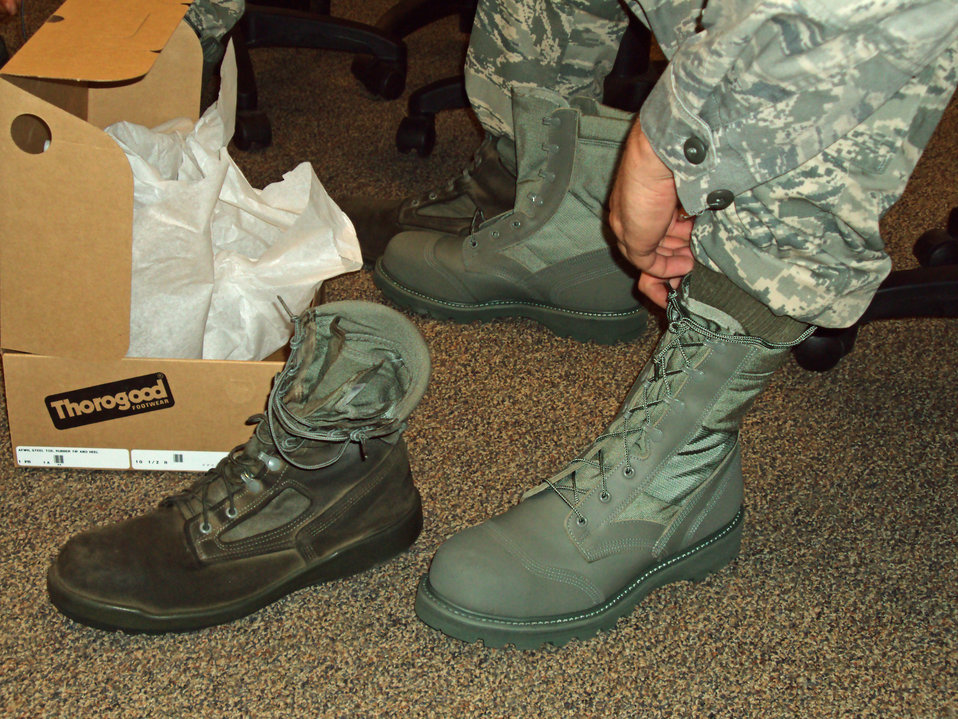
Boot test results announced

Air Force officials announced Jan. 28 the results of the recent Airman Battle Uniform combat boot wear test. The boot of choice, which includes a rubber-coated toe and heel, is pictured on the right. Research began to develop a stain-resistant boot to overcome issues with the current suede sage green boot, pictured on the left. Specialists with the Air Force Uniform Office, part of the Aeronautical Systems Center at Wright-Patterson Air Force Base, Ohio, oversaw the testing.